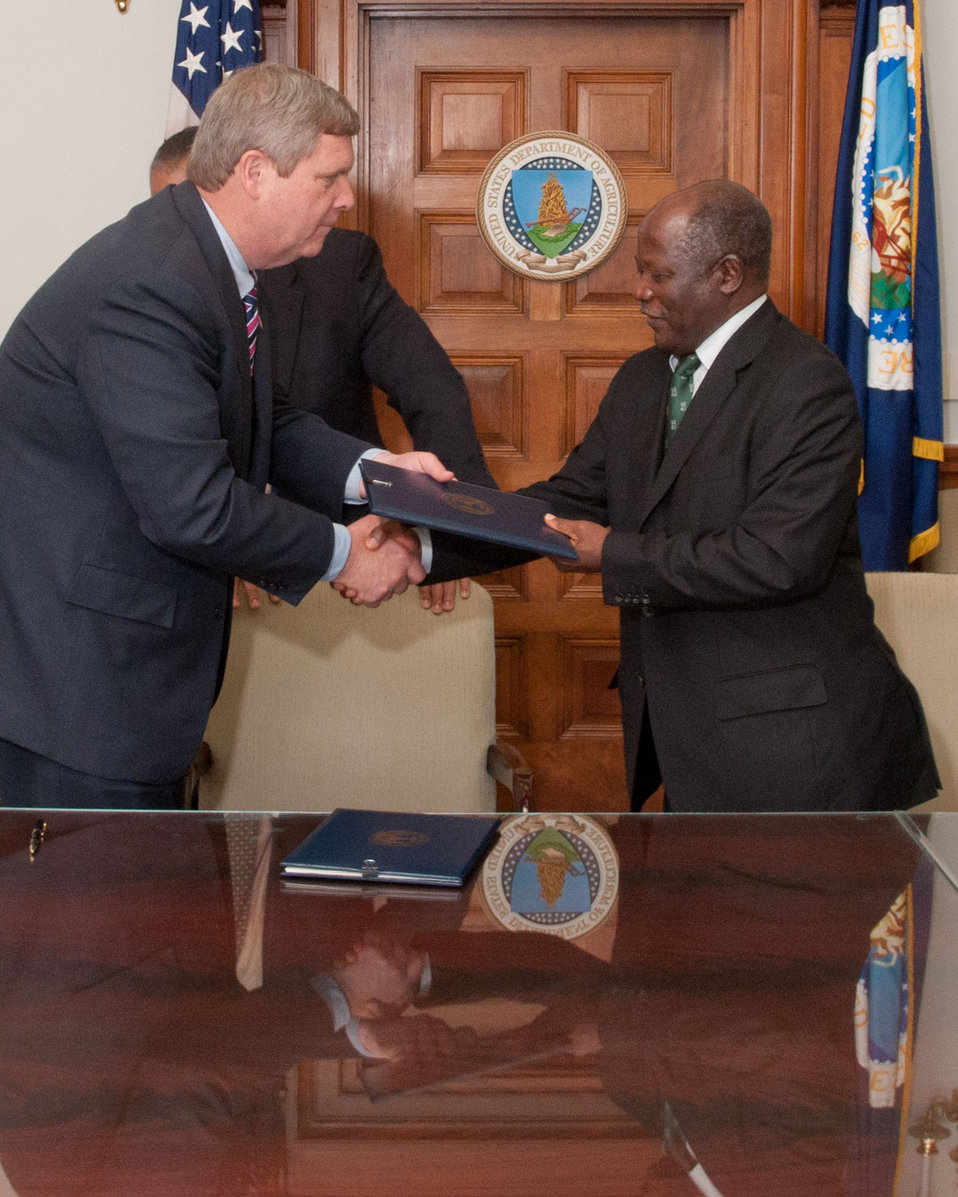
U.S. Department of Agriculture Secretary Tom Vilsack (left) and Alliance for a Green Revolution in Africa (AGRA) President Dr. Namanga Ngongi (right) sign a Memorandum of Understanding in Secretary Vilsack’s office in Washington, DC, on Thursday, May 26, 2011. AGRA’s programs integrate seeds, soils, market access, policy and partnerships and innovative finance. The alliance strives for comprehensive changes across Africa’s agricultural system. Programs also support agricultural education and water management, and the involvement and training of youth.